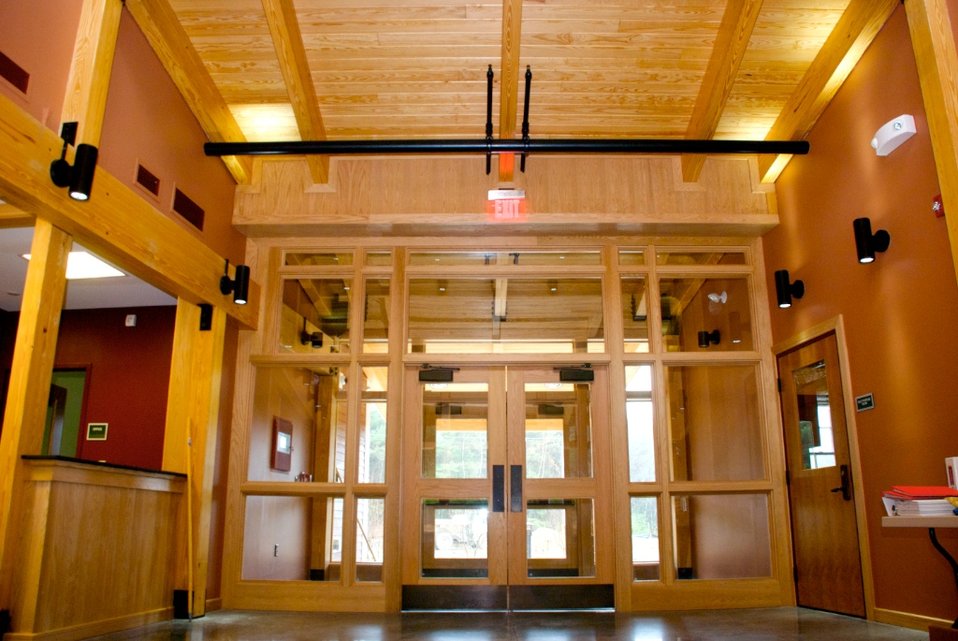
Assabet River NWR Visitor Center

In 2010, the U.S. Fish and Wildlife Service will open the doors to a new energy efficient administrative and visitor center for the Eastern Massachusetts National Wildlife Refuge Complex at the Assabet River refuge in Sudbury, Mass.

American Recovery and Reinvestment Act funding will support the fabrication and installation of exhibits that will enhance visitors' experience with information about the refuge's wildlife, habitats, and recreational opportunities.